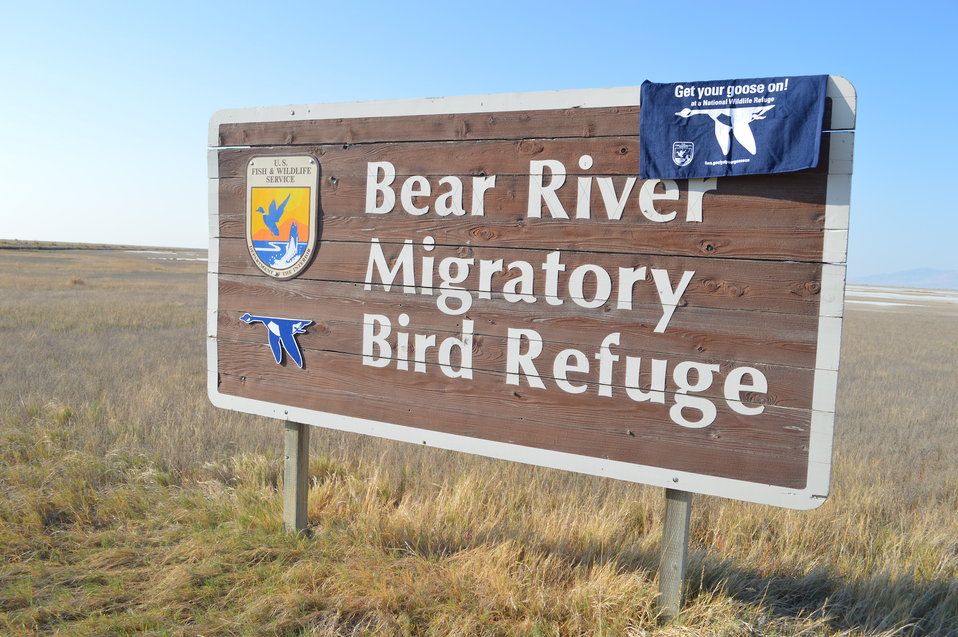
Bear River NWR

The Blue Goose found a friend in Utah.